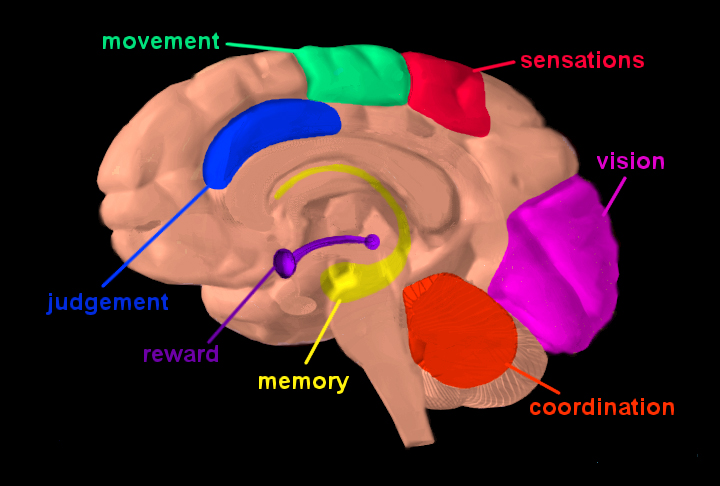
Brain regions

The brain is your body's 'Command Center.'